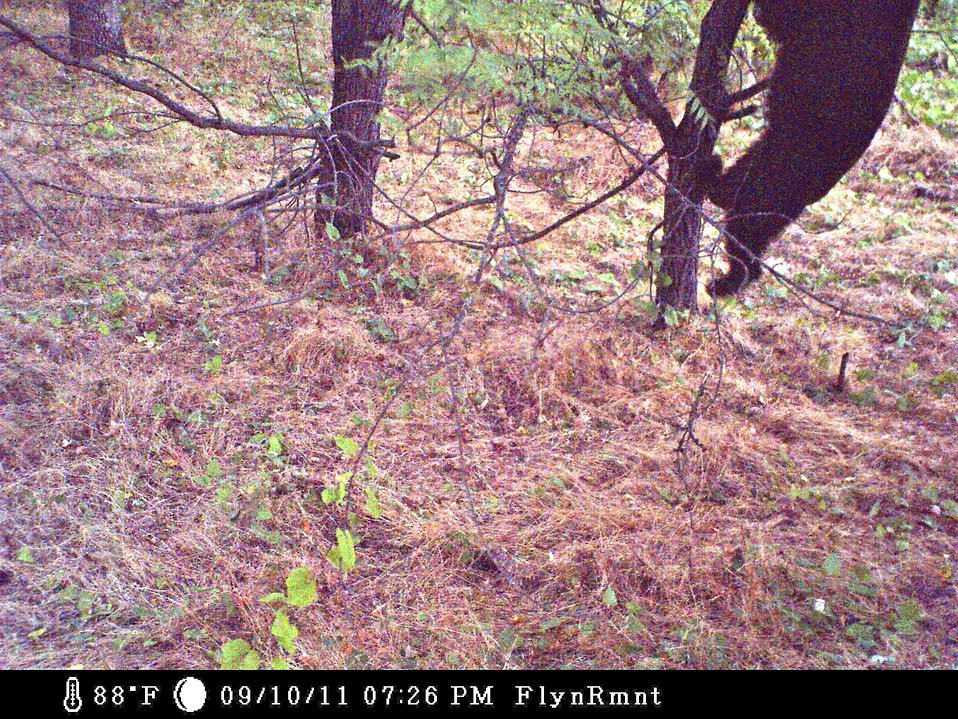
Better go see ...

black bear
trail camera photo
Sacramento River National Wildlife Refuge, CA